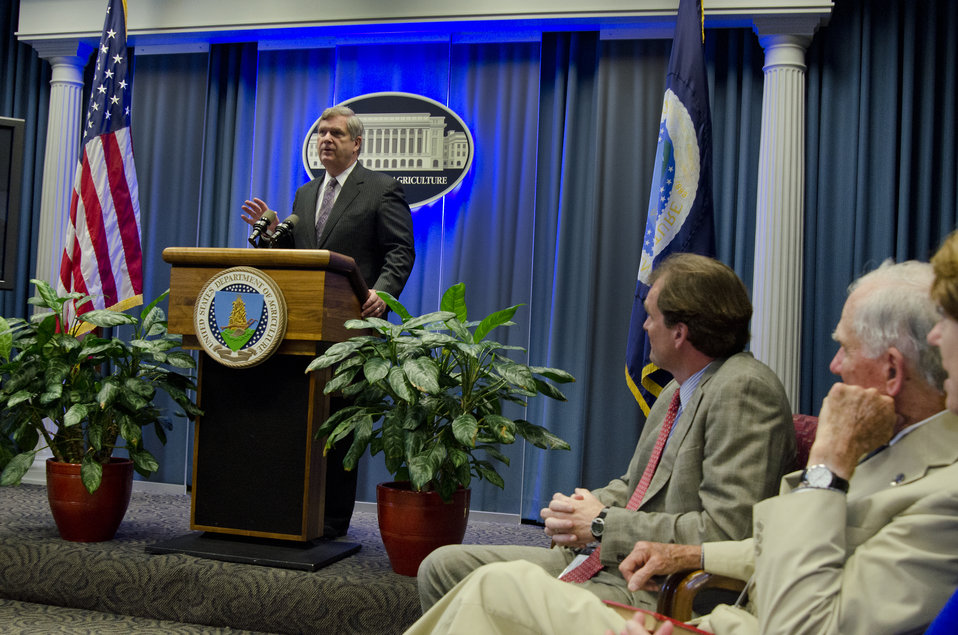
Agriculture Secretary Tom Vilsack makes remarks at the in ceremony of Krysta Harden as the new Deputy Secretary of Agriculture and Robert Bonnie as the new Under Secretary for Natural Resources and Environment (NRE) at the U.S. Department of Agriculture in Washington, D.C. on Monday, Aug. 12, 2013.